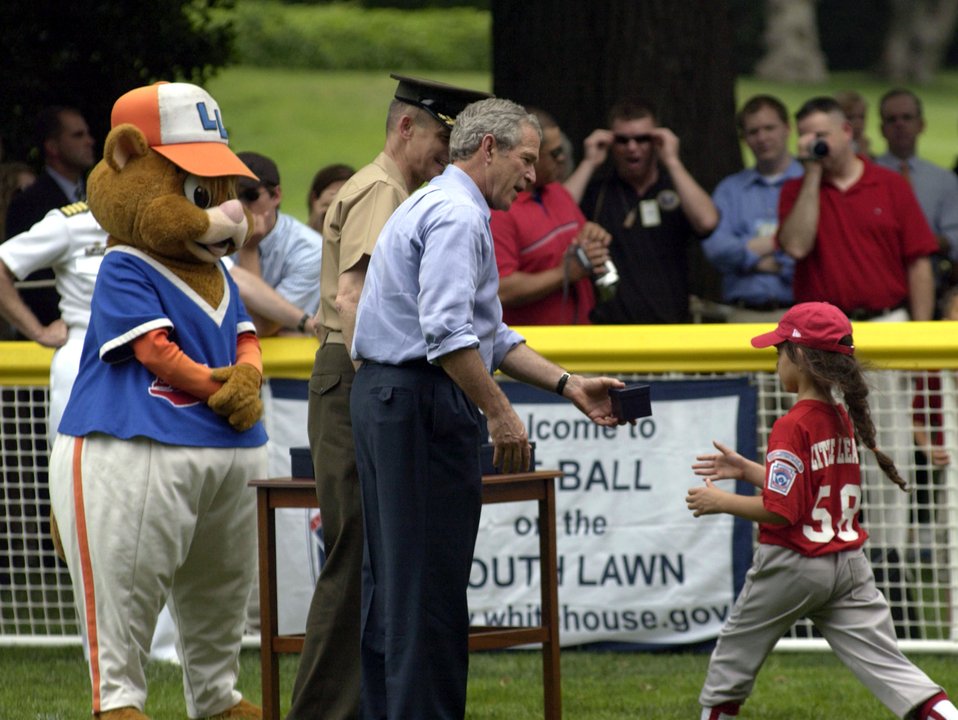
Tee ball on the South Lawn

President George W. Bush gives a ceremonial ball to Mia Martin of the McGuire AFB, N.J., Little League Yankees at the conclusion of the